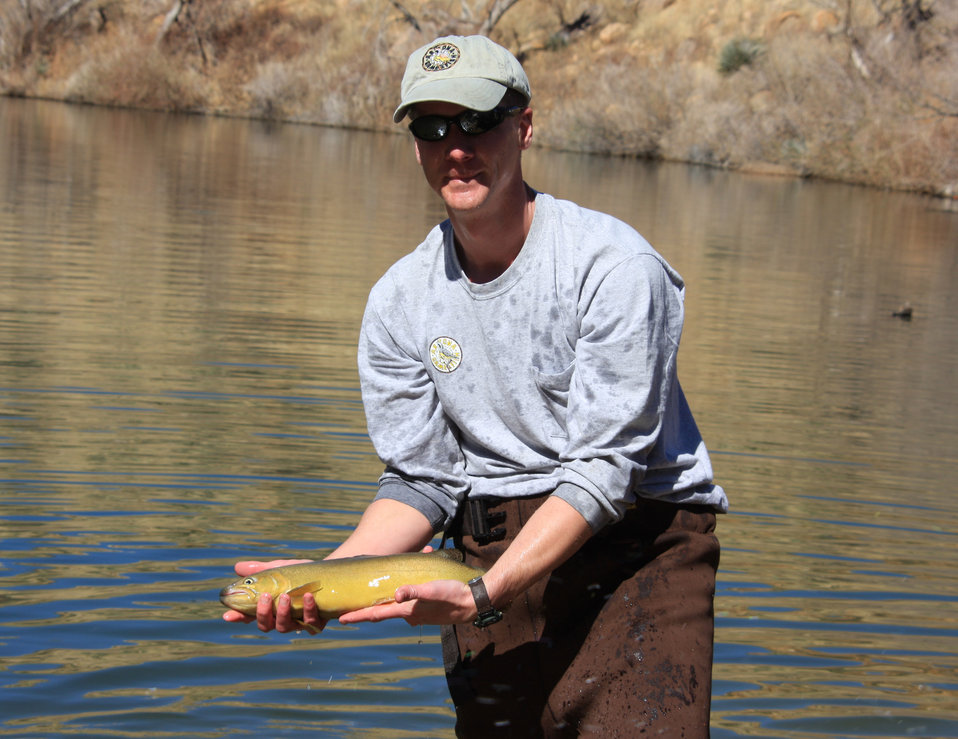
Releasing a Gila Trout

Arizona Game and Fish Department Fish Specialist Jason Kline releases native Gila trout into Frye Mesa Reservoir in the Pinaleno Mountains on Feb. 23, 2010. The project, funded by the American Recovery and Reinvestment Act, created the first Gila trout season in Arizona.